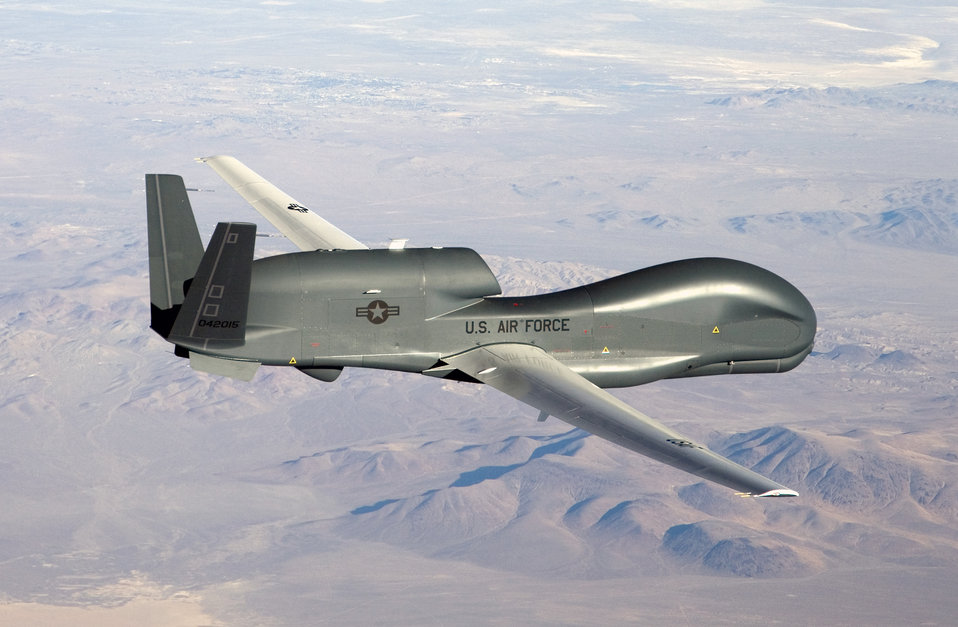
Global Hawk flying environmental mapping missions in Latin America, Caribbean

An RQ-4 Global Hawk unmanned aircraft like the one shown is currently flying non-military mapping missions over South, Central America and the Caribbean at the request of partner nations in the region.